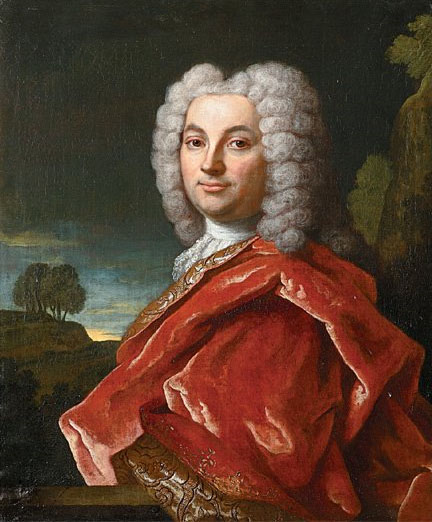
Homme 1729